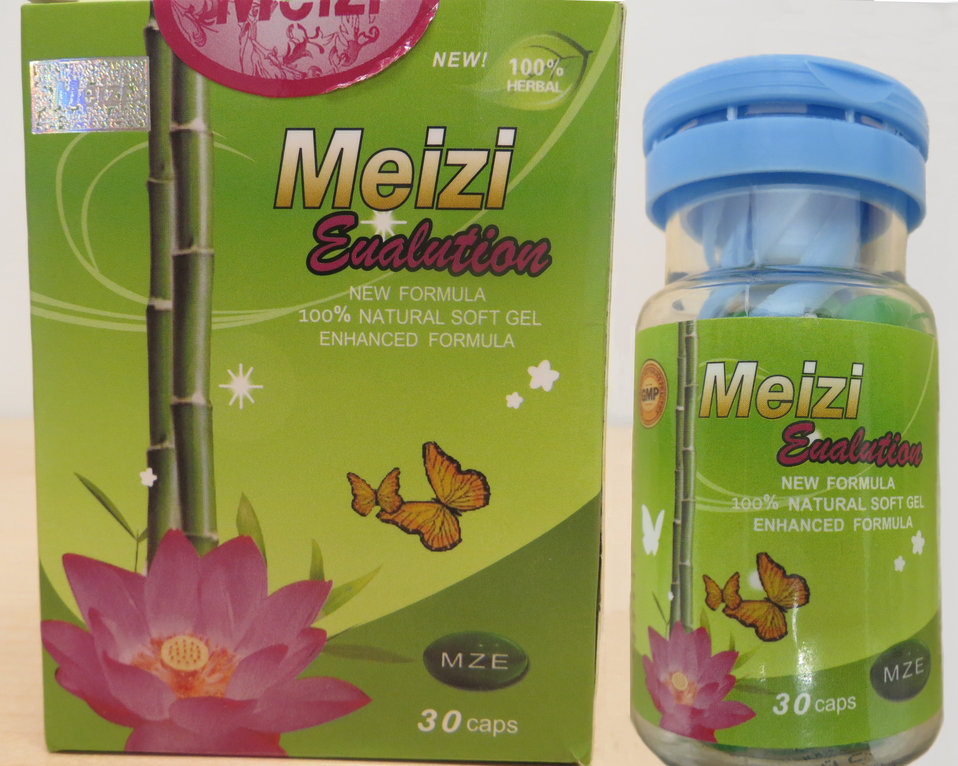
Meizi Evolution

June 27, 2013 - The FDA is advising consumers not to purchase or use 'Meizi Evolution,' a product promoted and sold for weight loss. The product was found to contain undeclared sibutramine. For more information, go to www.fda.gov/Drugs/ResourcesForYou/Consumers/BuyingUsingMe....

And read this Consumer Update: Beware of Fraudulent ‘Dietary Supplements’